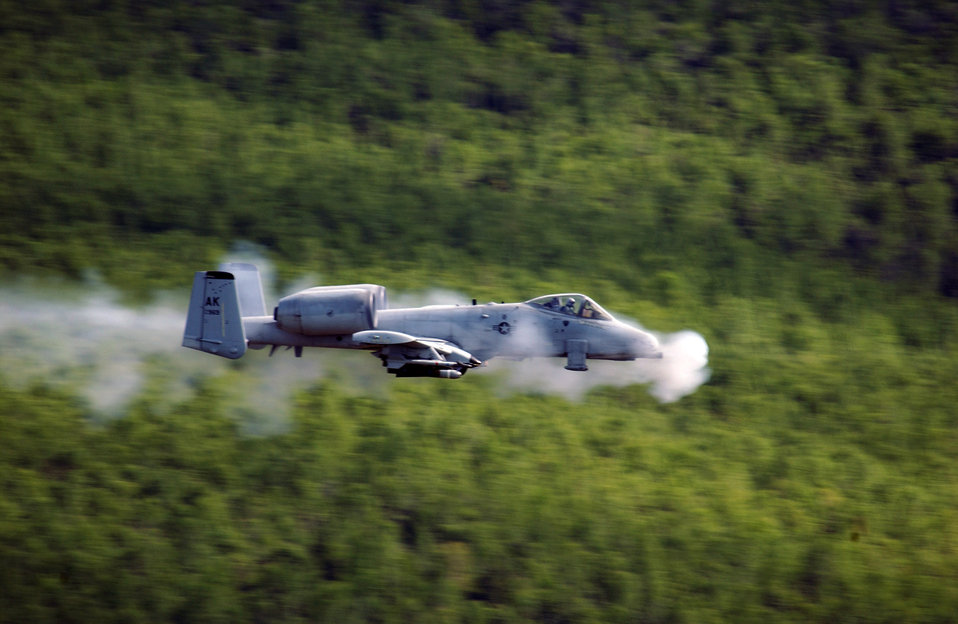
New wings to secure A-10 longevity

An A-10 Thunderbolt II from the 355th Fighter Squadron at Eielson Air Force Base, Alaska, fires a 30mm GAU-8 Avenger seven-barrel Gatling gun over the Pacific Alaska Range Complex.